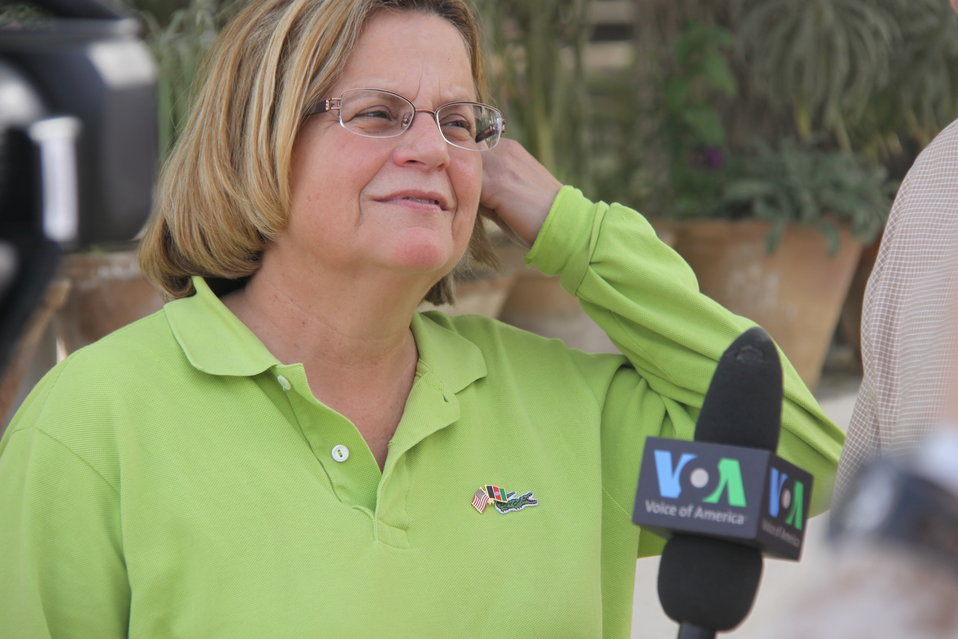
Meeting with Local Leaders in Kandahar